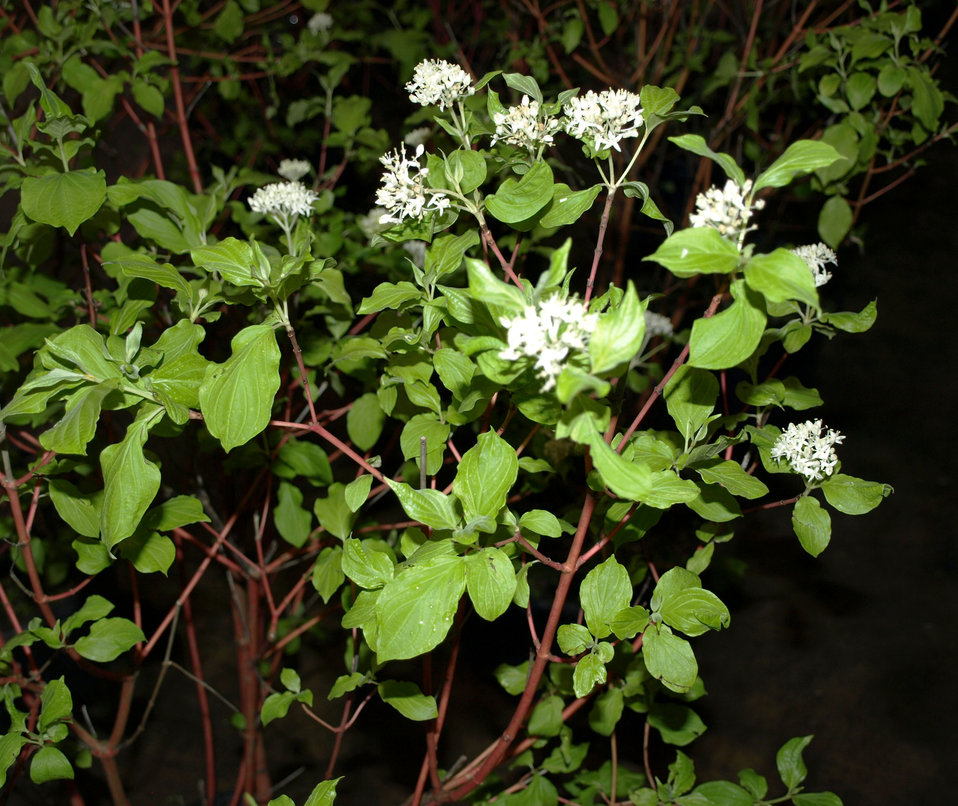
Red twig dogwood

Cornus sericea ‘Flaviramea’ (Red twig dogwood), a native plant

Learn more about EPA’s Exhibit at the 2010 Philadelphia International Flower Show:
www.epa.gov/reg3esd1/garden/flower show.htm
www.epa.gov/reg3esd1/garden/flower show plants.htm
www.epa.gov/reg3esd1/garden/pdf/flowershow2010.pdf (6 pp, 864K)